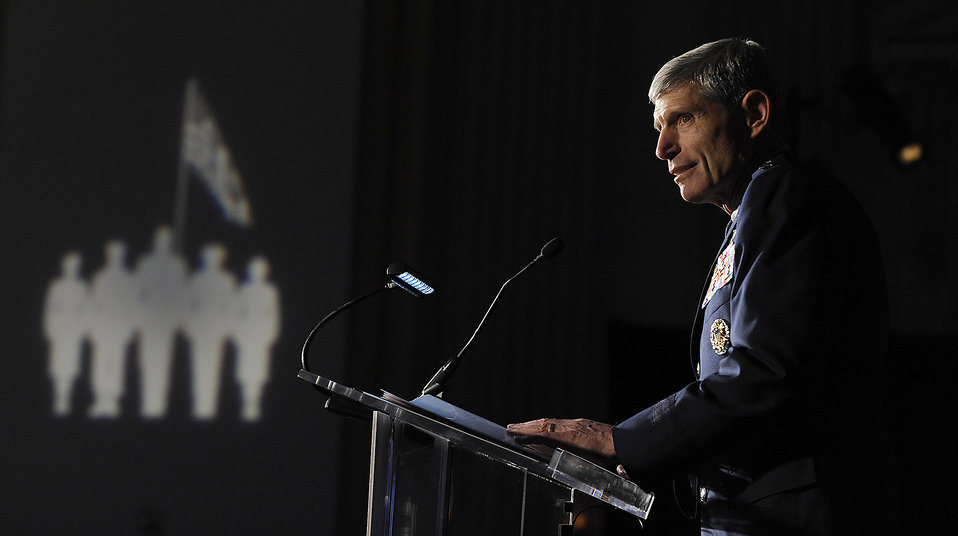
Times Airman of the Year

Air Force Chief of Staff Gen. Norton Schwartz congratulates Master Sgt. Brandon Lambert of the 728th Air Control Squadron, Eglin Air Force Base, Fla., in a speech prior to presenting Lambert him the 2012 Air Force Times Airman of the Yearan award during the 2012 Military Times’ Service Members of the Year Awards awards ceremony July 19, 2012, in Washington, D.C.